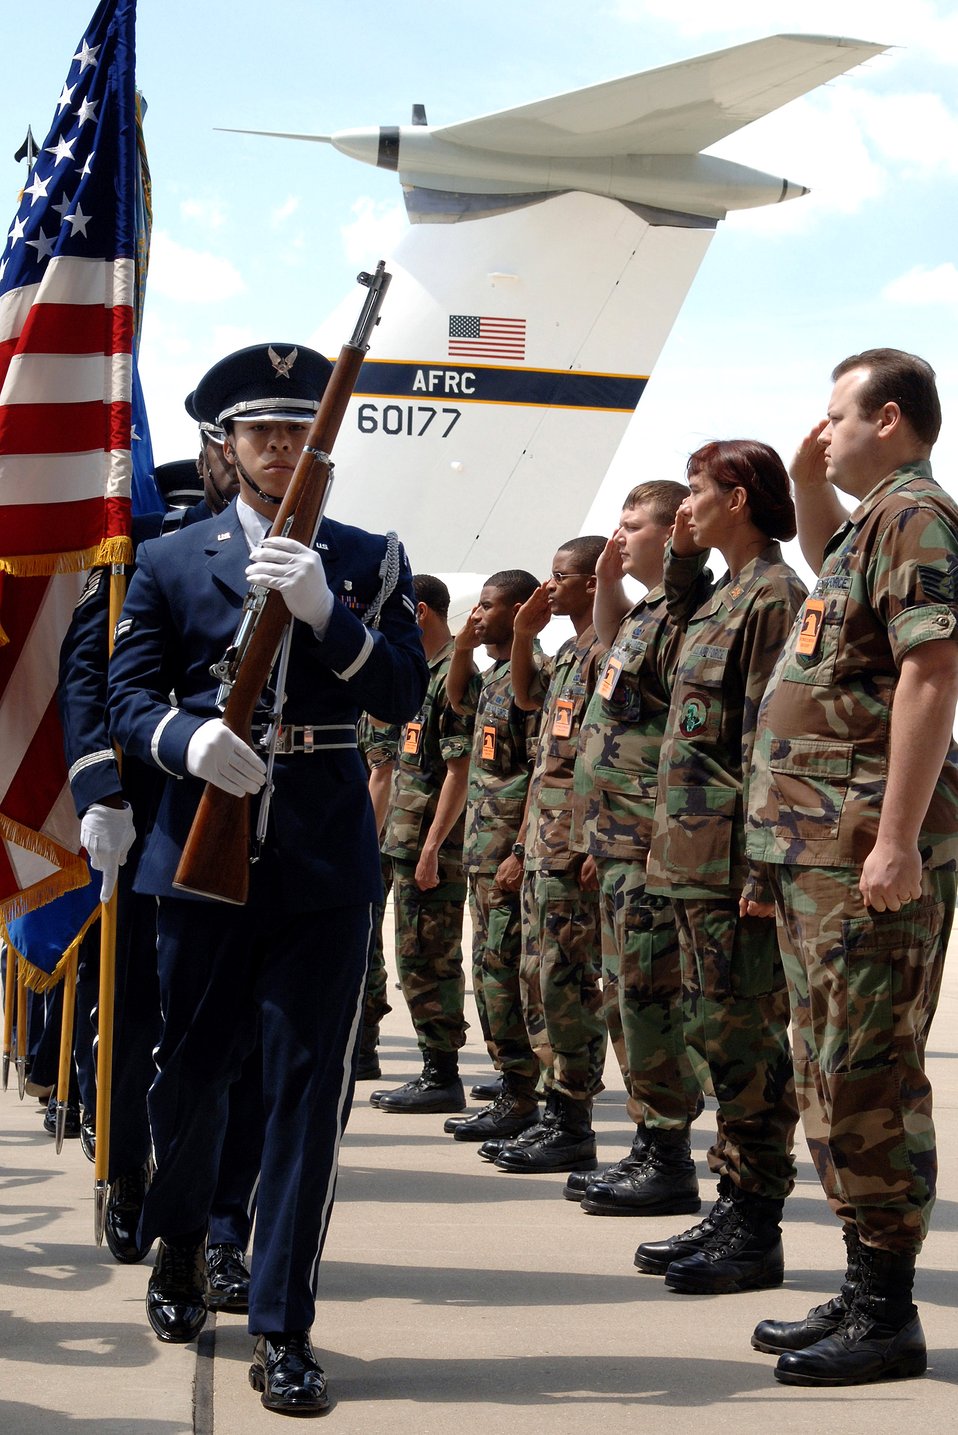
'Hanoi Taxi' arrives at National Museum of the Air Force

Airman 1st Class Humberto Alcocer leads the honor guard during a ceremony recognizing the last mission of the C-141